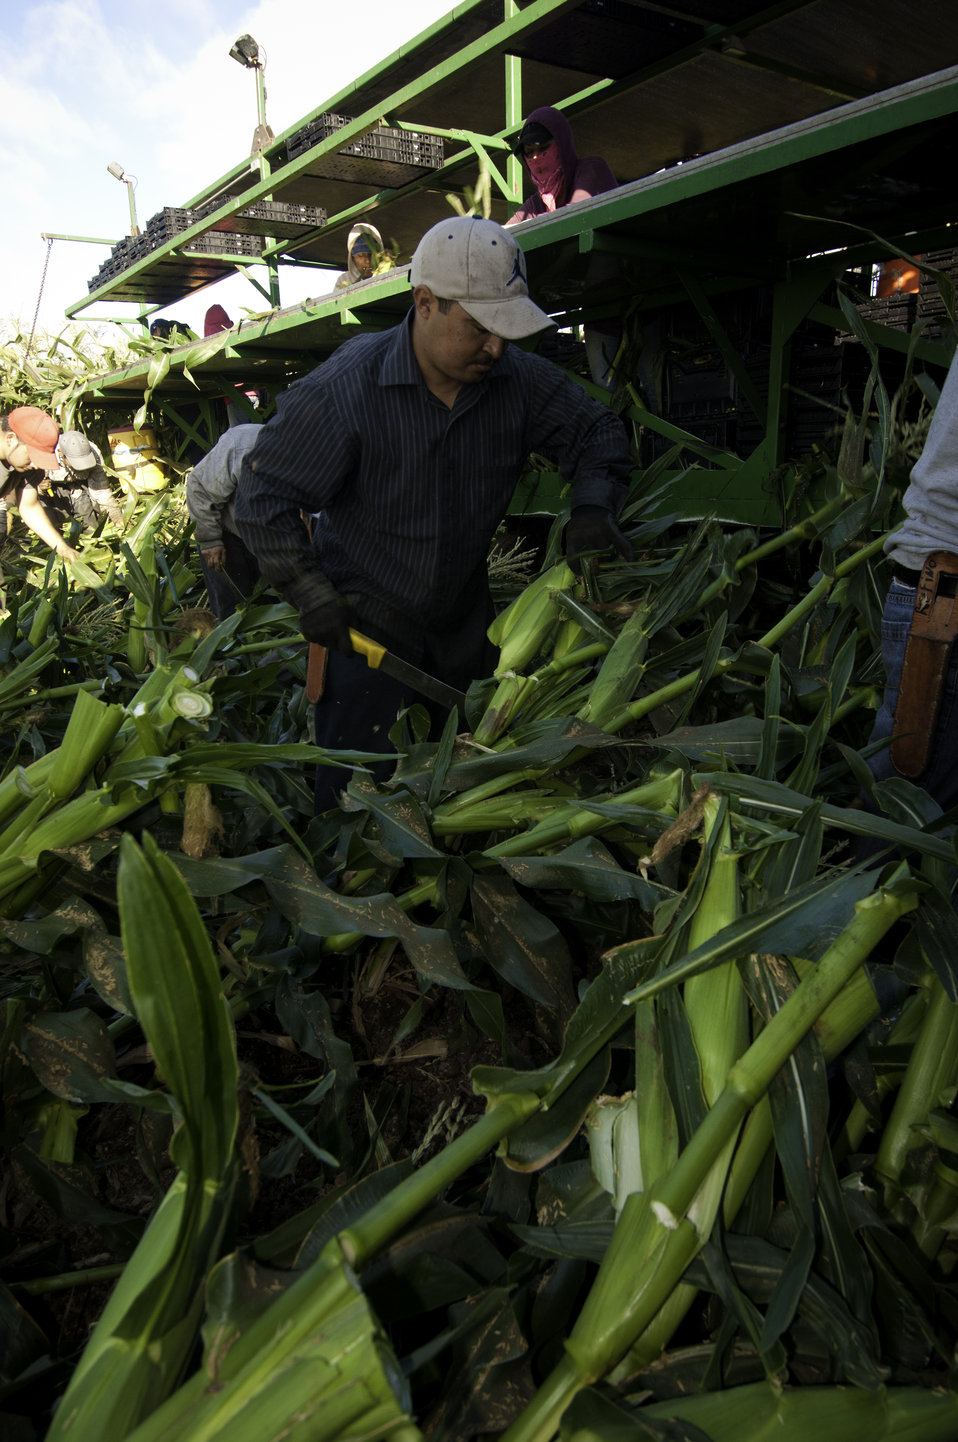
Migrant workers harvest corn on Uesugi Farms in Gilroy, CA on Wednesday, Aug. 28, 2013.